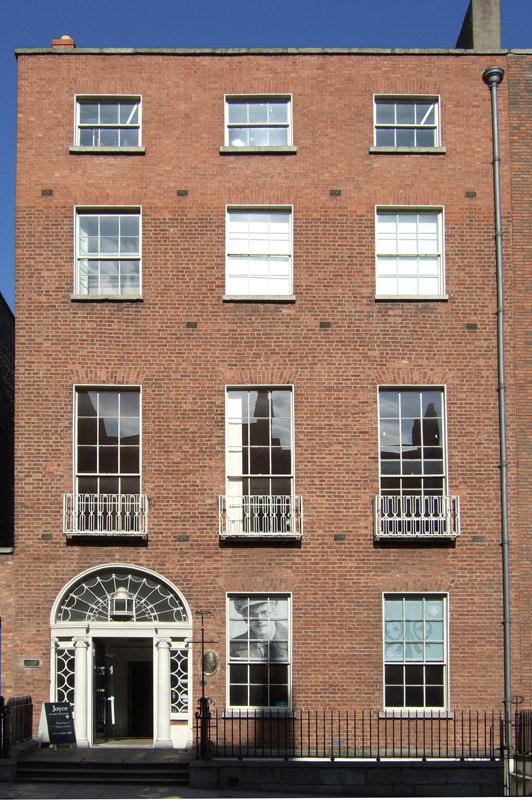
James Joyce Centre at 35 Great George's Street, Dublin.